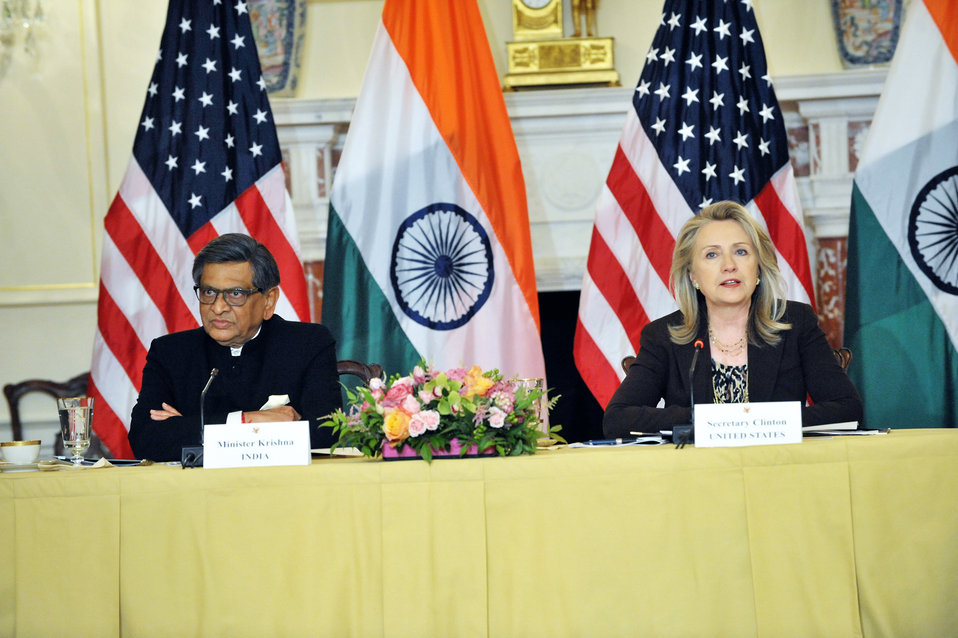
Secretary Clinton Delivers Remarks at the U.S.-India Strategic Dialogue

U.S. Secretary of State Hillary Rodham Clinton delivers remarks at the U.S.-India Strategic Dialogue at the Department of State in Washington, D.C. on June 13, 2012.